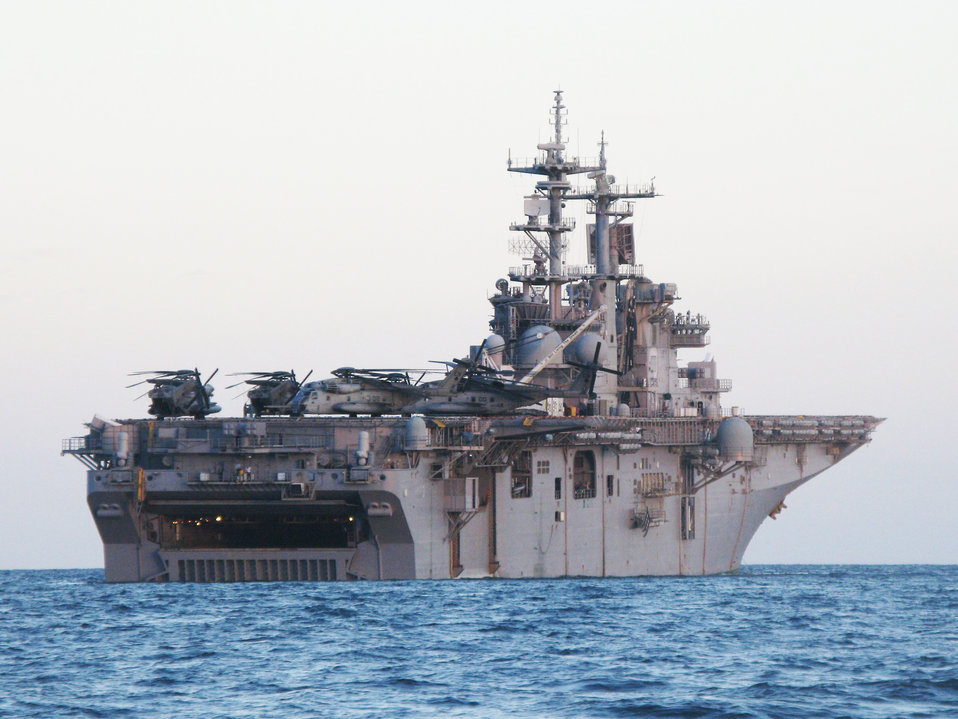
This photograph depicts the USS Kearsarge (LHD 3) during Operation Continuing Promise (CP), 2008.